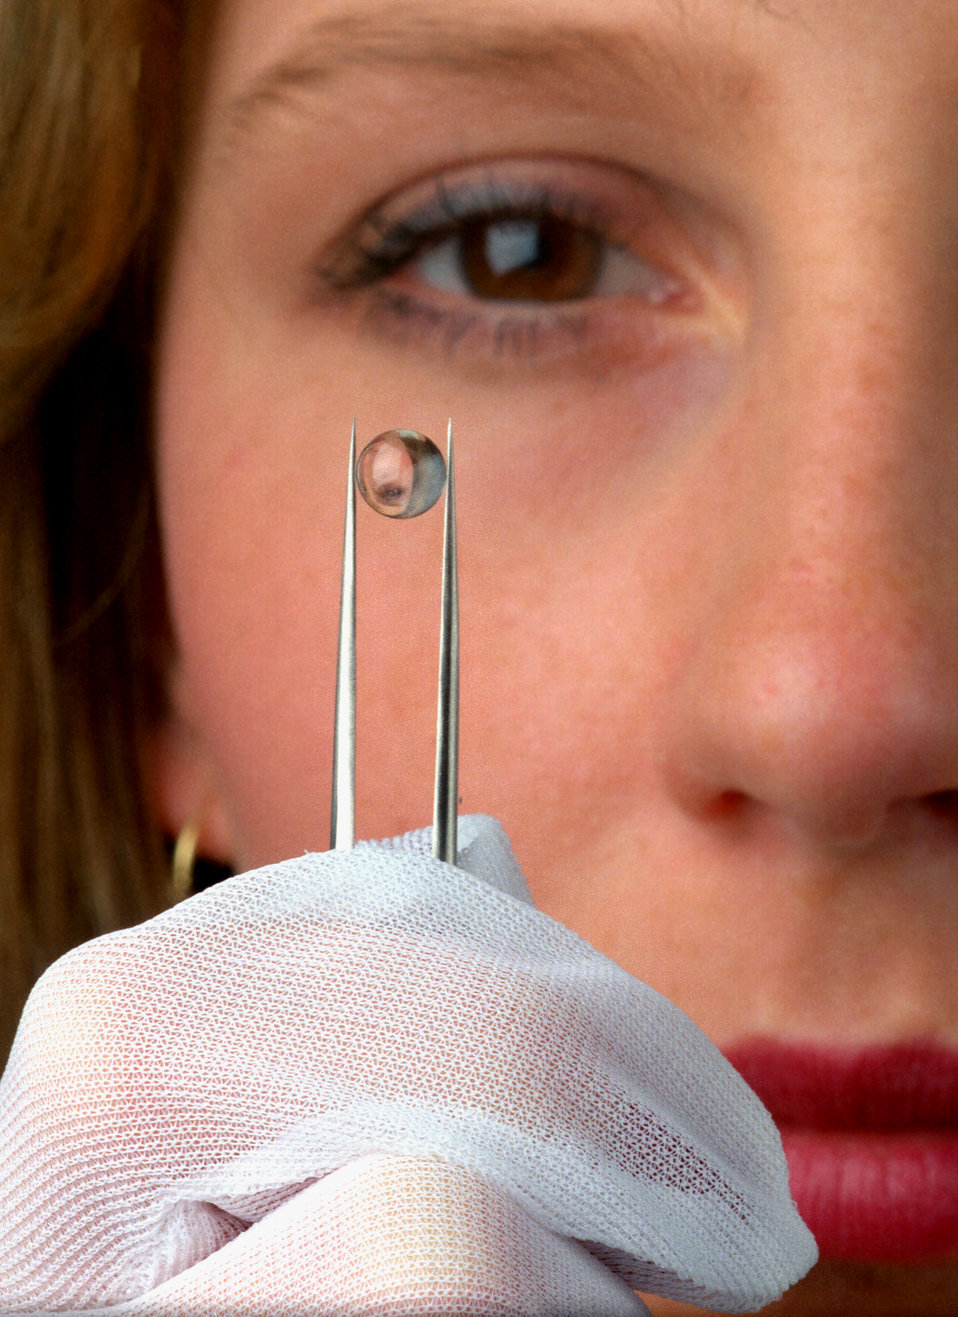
Optics Model Y-12 Plant Oak Ridge

94-412 DOE photo by Lynn Freeny

Optics Model Y-12 Plant Oak Ridge Tennessee 5-18-1994